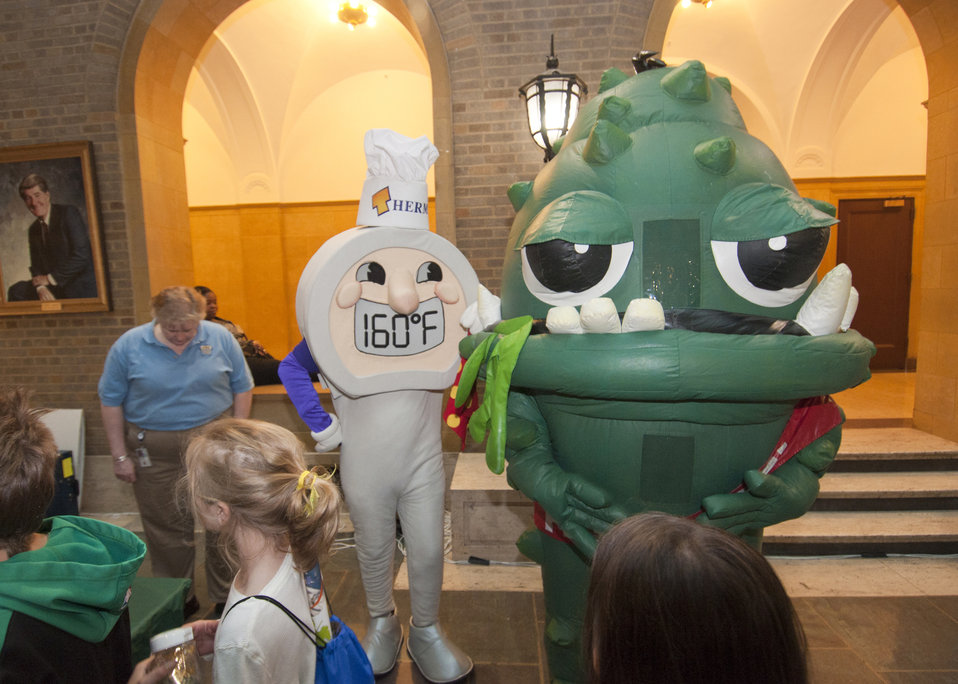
20110428 dm LSC 0104

The U. S. Department of Agriculture (USDA) held its annual “Take Your Child to Work Day” on the patio of the Whitten Building, in Washington, DC, on Thursday, April 28, 2011. The program is designed to introduce young people to USDA’s wide range of responsibilities and services. “Thermy” is the Food Safety and Inspections Service (FSIS) messenger to remind consumers to use food thermometers to ensure that their food is cooked to the correct temperature. “BAC” is the big green cartoon character used for FSIS “Fight BAC” campaign against bacteria. The campaign focuses on four important messages for consumers: wash hands and surfaces frequently; don’t’ cross contaminate; cook to proper temperatures; and refrigerate promptly.